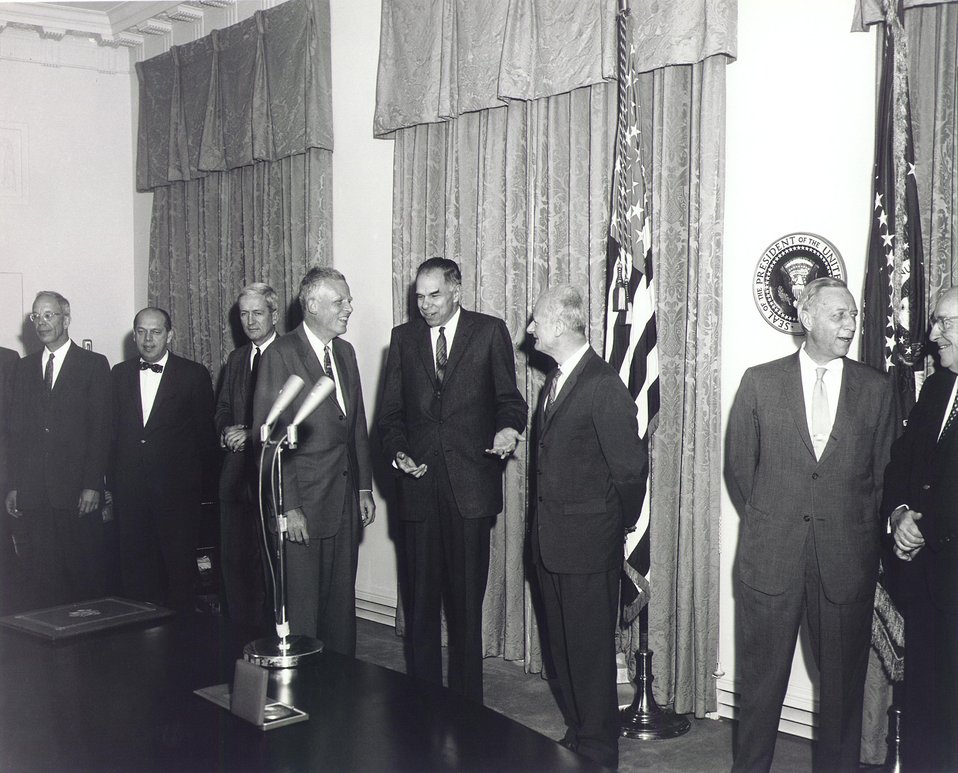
Fermi Award Ceremony for Dr. Bethe in Washington on Dec. 1, 1961.